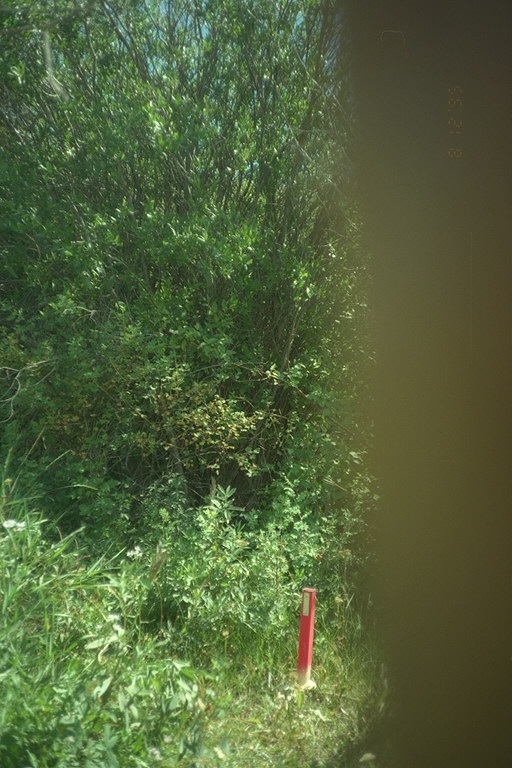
Riparian area Public Lands Salmon Field Office UCSC Upper Columbia Salmon Clearwater District